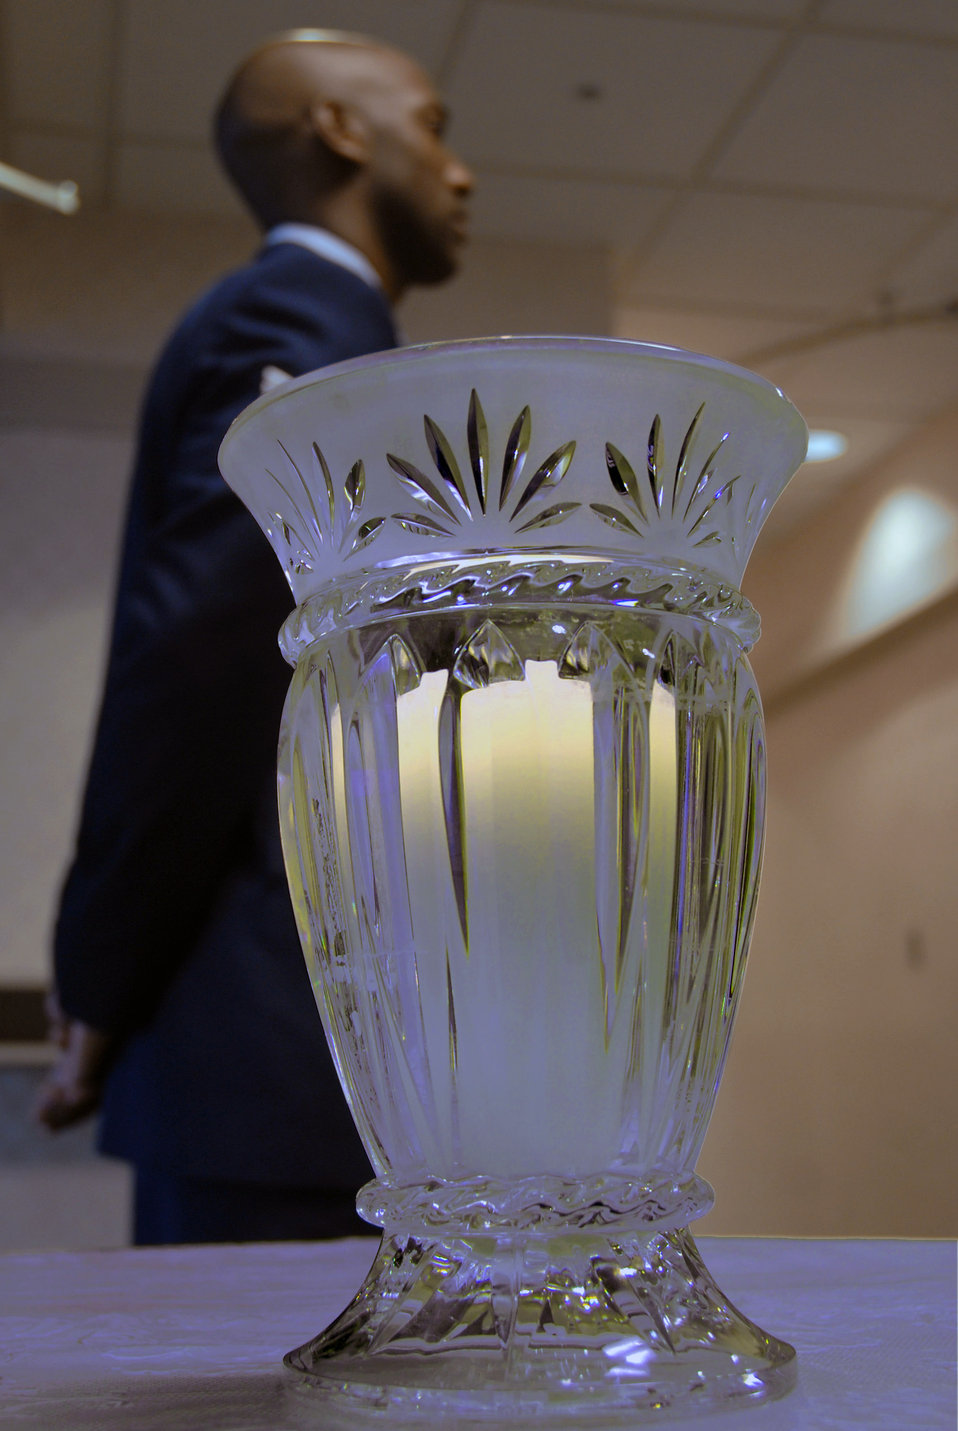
Honoring Dr. King

Tech. Sgt. Travis Haywood, from the National Air and Space Intelligence Center at Wright-Patterson Air Force Base, Ohio, stands watch at a candlelight vigil in honor of Dr. Martin Luther King Jr during a day of celebration here on 18 Jan.